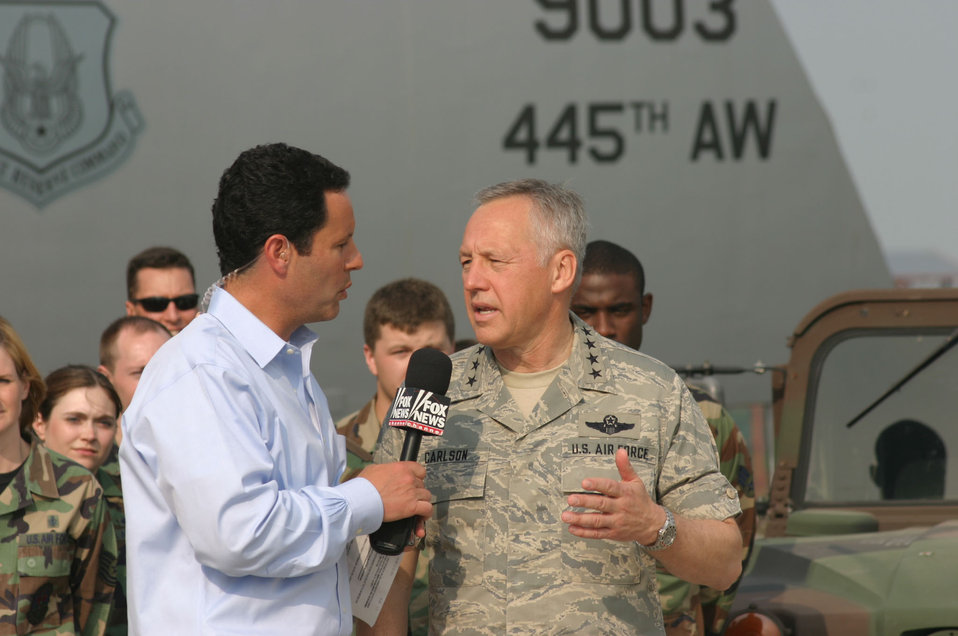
'FOX and Friends' shines spotlight on Wright-Patterson AFB

Gen. Bruce Carlson, commander of Air Force Materiel Command, explains the need to recapitalize the Air Force's aging aircraft fleet to